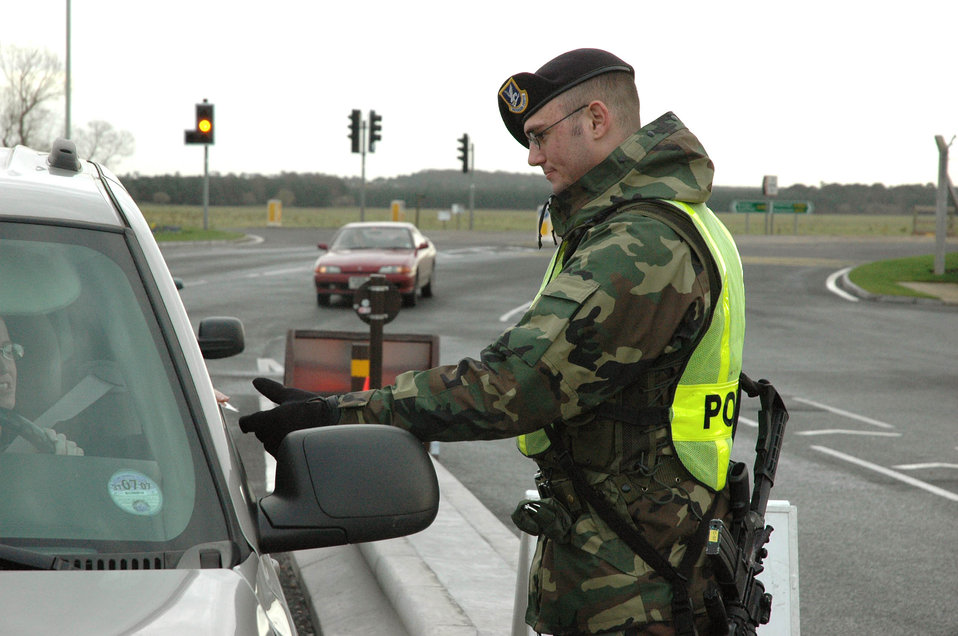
Serving through the season: Airman 1st Class Jack Smithson III

Airman 1st Class Jack Smithson III works in security forces at Royal Air Force Lakenheath, United Kingdom.